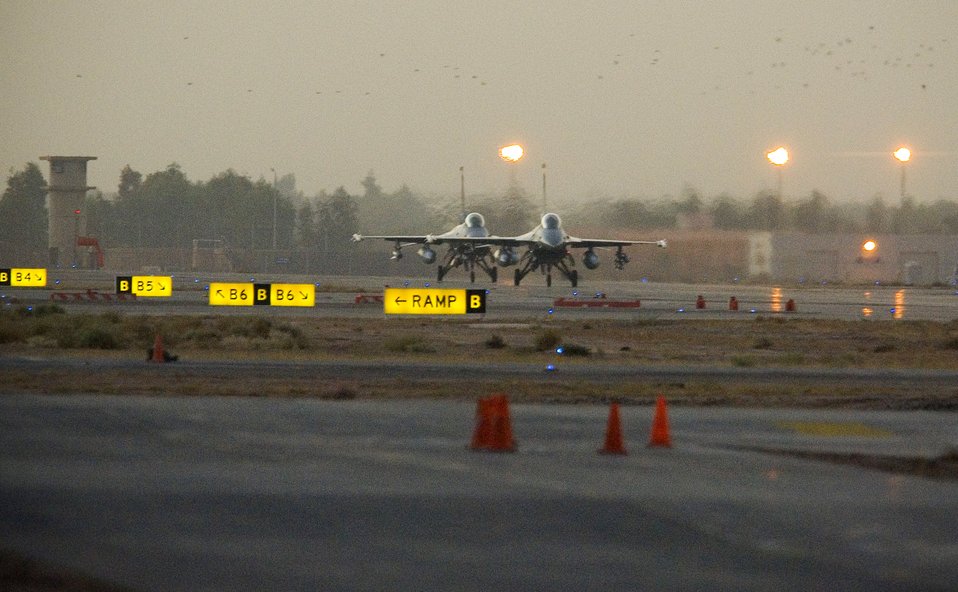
Flight safety office brings Balad bird strikes down 30 percent

Two F-16 Fighting Falcons taxi out on the runway as a flock of small birds fly over them in November at Balad Air Base, Iraq. Last year alone bird strikes caused $42 million in damage to Air Force aircraft. The 332nd Air Expeditionary Wing flight safety office, with support of base volunteers, has helped reduced the number of bird strikes by 30 percent.